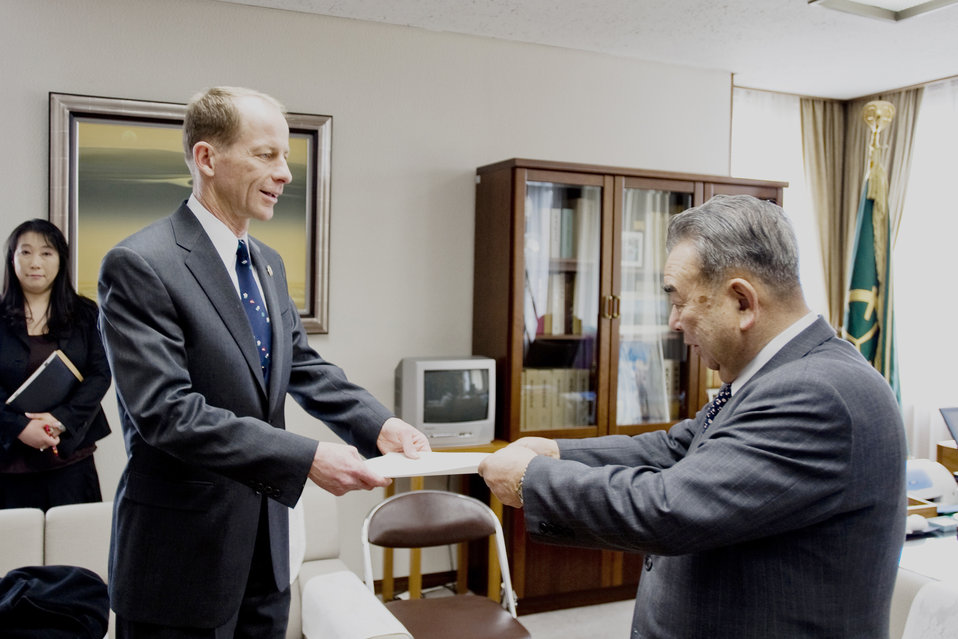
Mayor for a day

Col. David Stilwell, 35th Fighter Wing commander at Misawa Air Base, Japan, receives a letter of appointment from Misawa City Mayor Kazumasa Taneichi March 23, 2010, at the mayor's office during the Misawa Mayor for a Day event. The letter officially appointed Colonel Stilwell as the honorary mayor of Misawa City for the day.